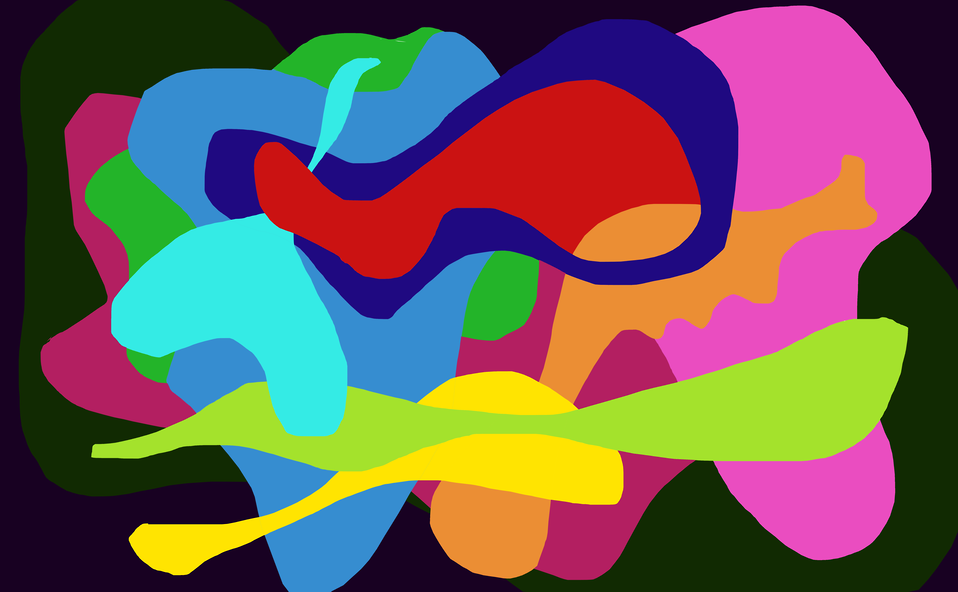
drawing abstract